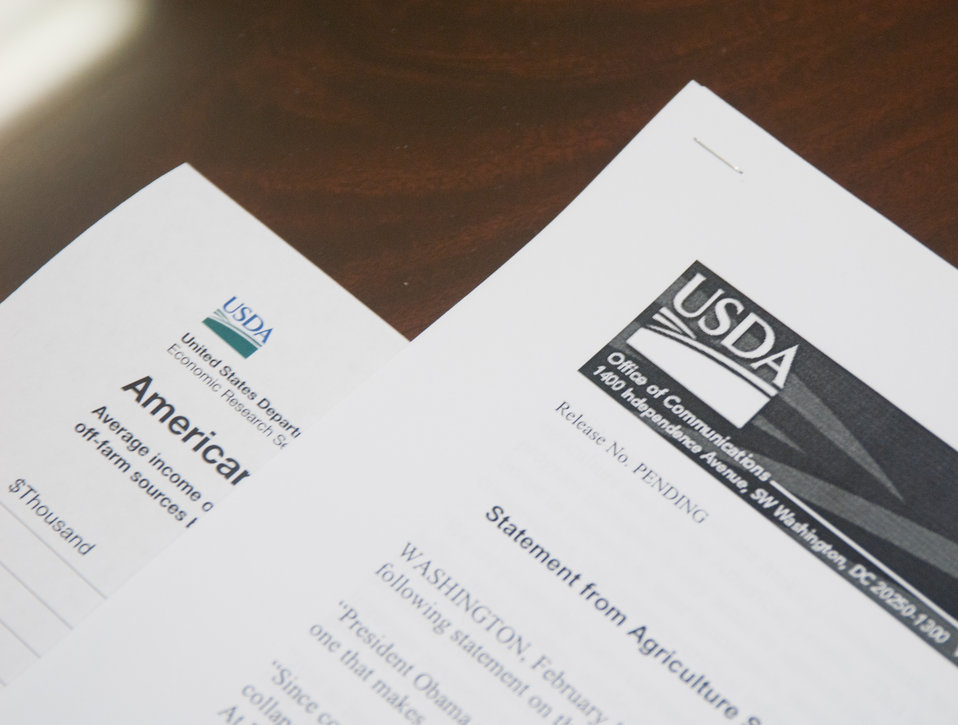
Agriculture Secretary Tom Vilsack briefed the news media on how the budget will fulfill President Barrack Obama’s proposed budget, Monday, February 14, 2011, in Washington, D.C. In an effort to promote good government and streamline agency operations in a host of programs, programs have been selected to be reduced or terminated. Secretary Vilsack said, “In the end we must cut to grow. And we are working to do it as responsibly as possible for American Agriculture and the American people.”